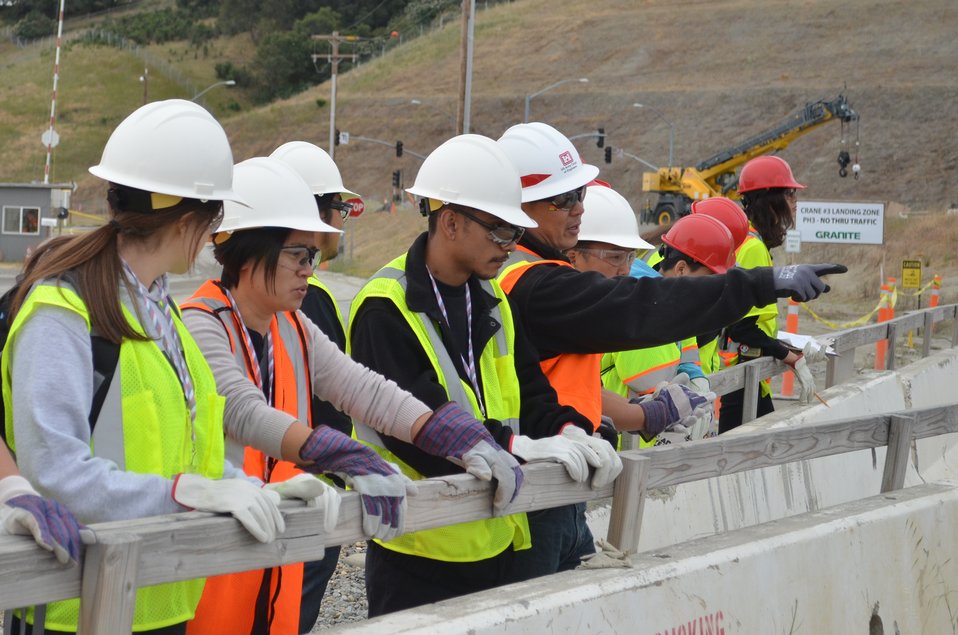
Hiram W. Johnson High School students visit Folsom Dam auxiliary spillway

Chief of the Joint Federal Project engineering support unit, Ben Dizon (second from the right), explains the construction process for the Folsom Dam auxiliary spillway project in Folsom, Calif., to students from Sacramento’s Hiram Johnson High School during a tour of the construction site May 20, 2014. 'We teach concepts in design and engineering, and our students have practiced designing their own particular project and seeing it through to completion,' said Glenn Singley, coordinator for the technology and engineering design academy at Hiram Johnson. 'We want them to see a real-world example of what that effort looks like on a larger scale, and also hope to excite their curiosity about the variety of careers that are available.' Photo cropped for emphasis.